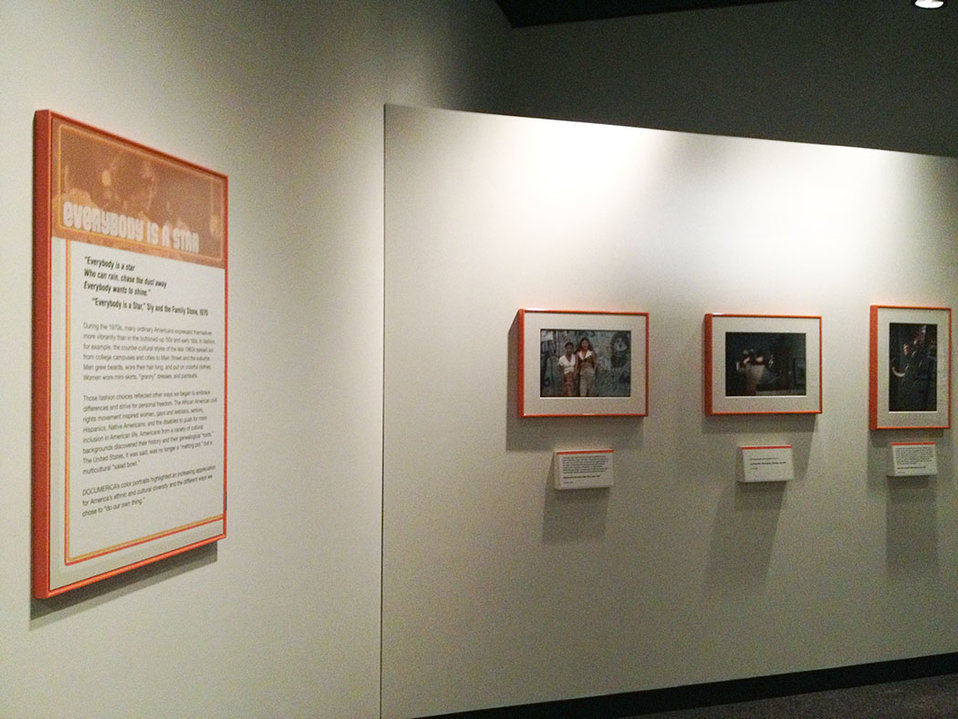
Documerica Photos and Graphics

Lots of installation progress in the O'Brien Gallery on the 'Searching for the Seventies' exhibit.